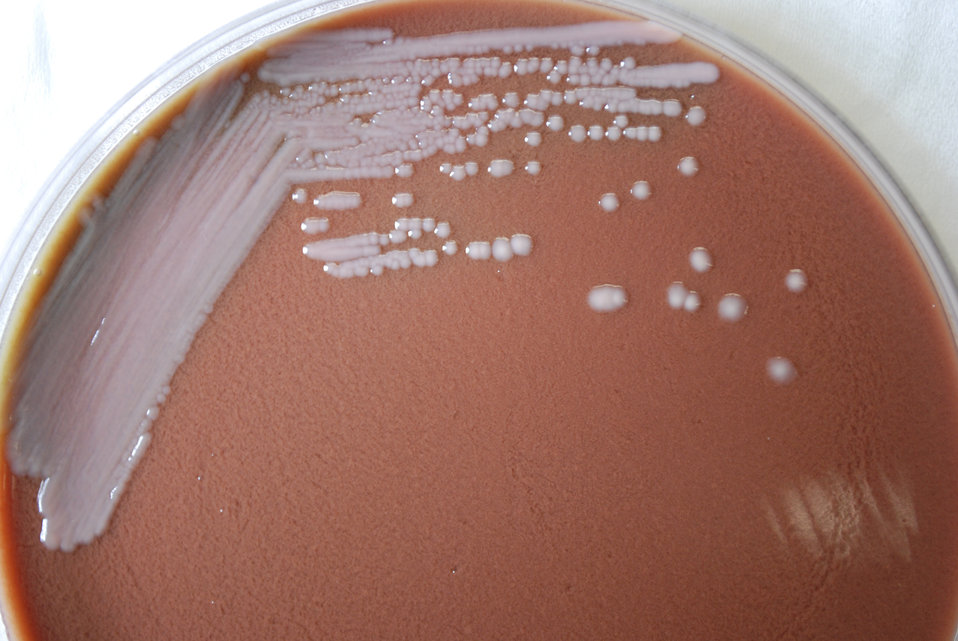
A closer view of PHIL 12253, this photograph depicts the colonial morphology displayed by Gram-negative Burkholderia mallei bacteria, which was grown on a medium of chocolate agar, for a 48 hour time period, at a temperature of 37�C. B. mallei bacteria are known to cause the disease known as 'glanders'.